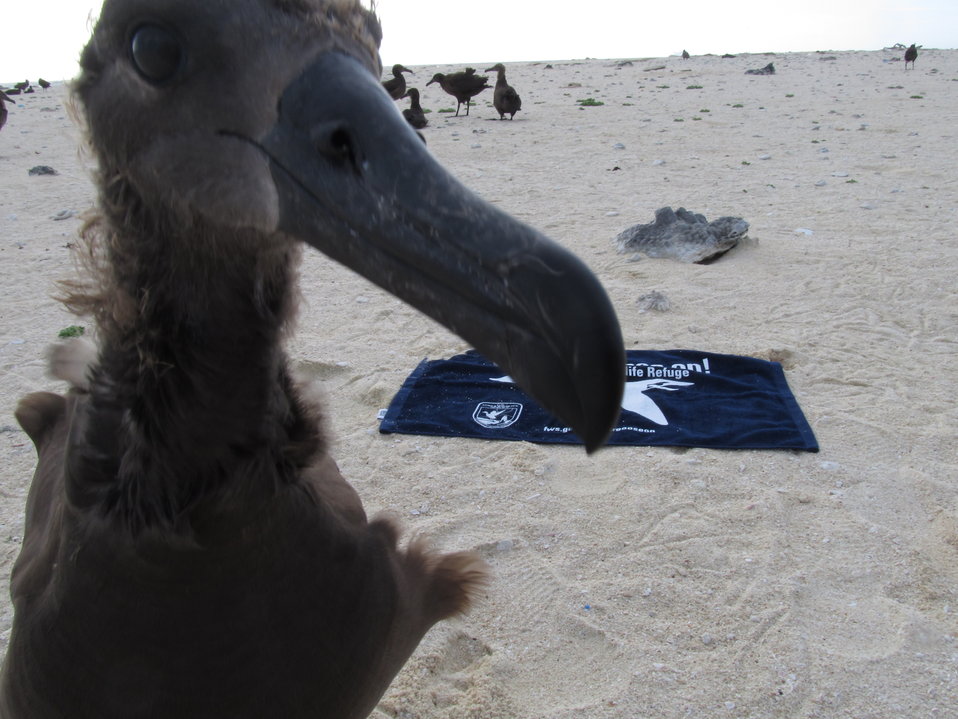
Get Your Goose On! - Albatross Style

Photo taken at Laysan Island in the Papahanaumokuakea Marine National Monument, Hawaiian Islands National Wildlife Refuge. Laysan is located approximately 800 miles northwest of Honolulu, Hawaii and is a remote field camp staffed year round for habitat restoration and population monitoring.